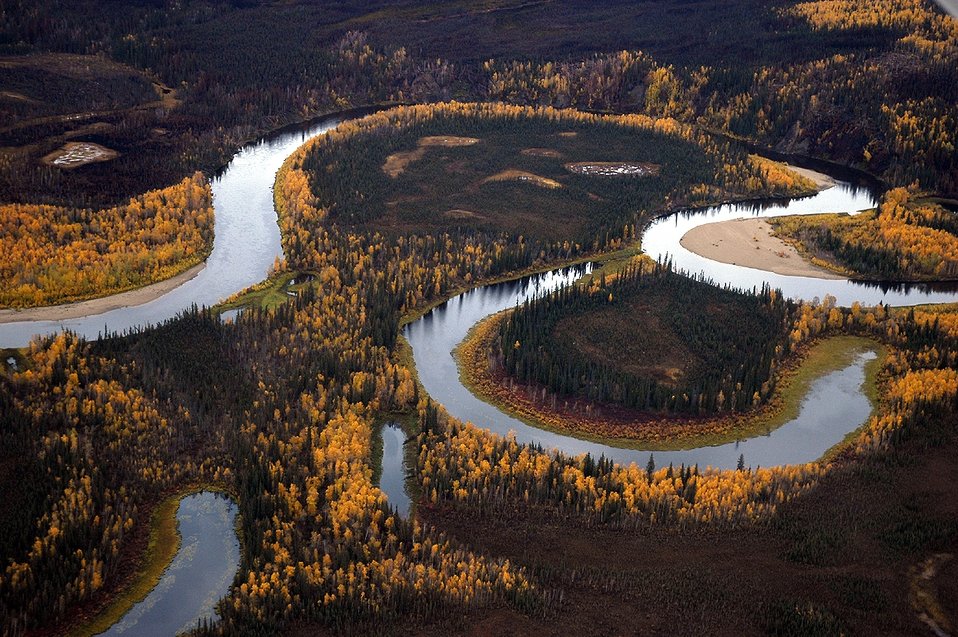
Kanuti Island in fall, Kanuti NWR

The Kanuti River winds through banks of golden trees in autumn on the Kanuti National Wildlife Refuge in Alaska.